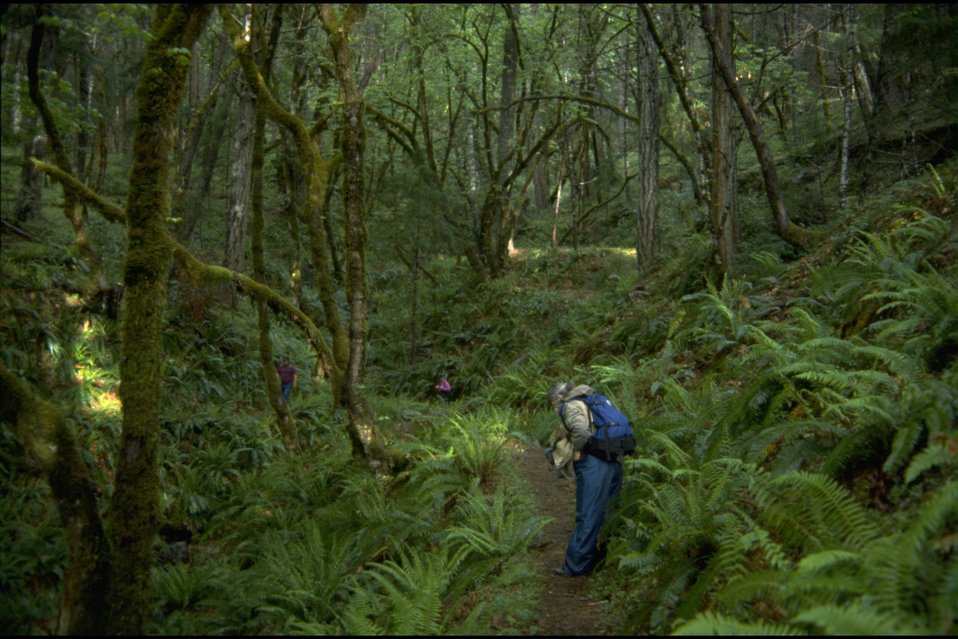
Rogue River Trail, near Slide Creek. Hiker.